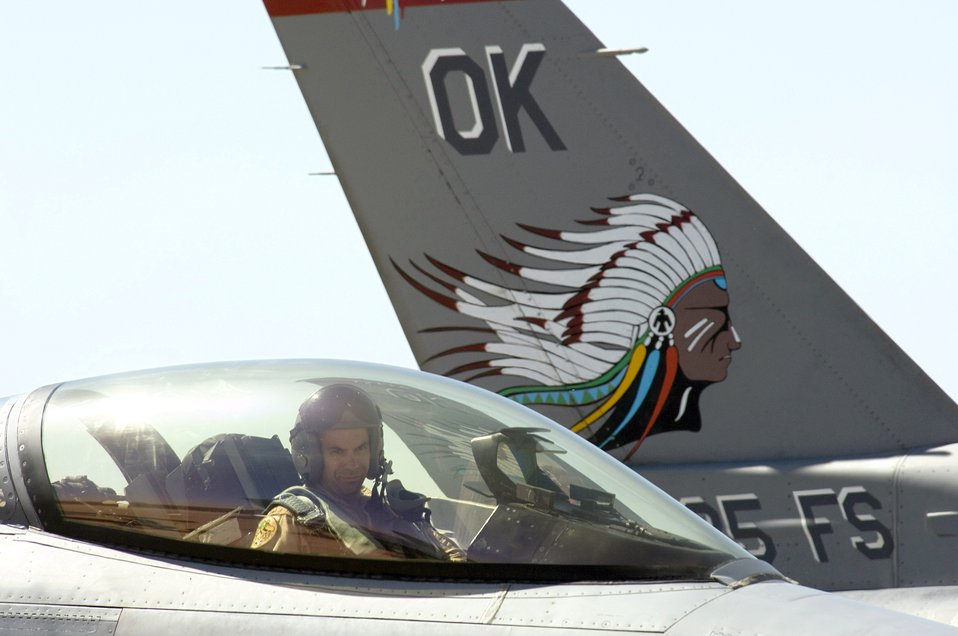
'Coronet East' flies home

MORON AIR BASE, Spain -- Maj. Kelly Connell shuts down his F-16 Fighting Falcon engine here. The pilot from the 180th Fighter Wing at Toledo, Ohio, is on his way home on a